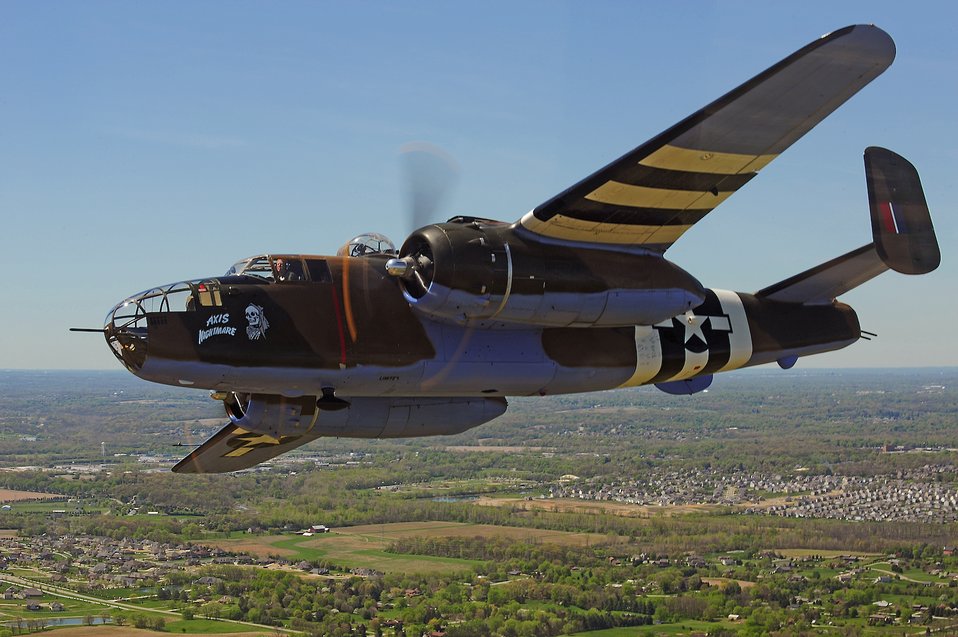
B-25 Mitchells fly again

A vintage B-25 Mitchell